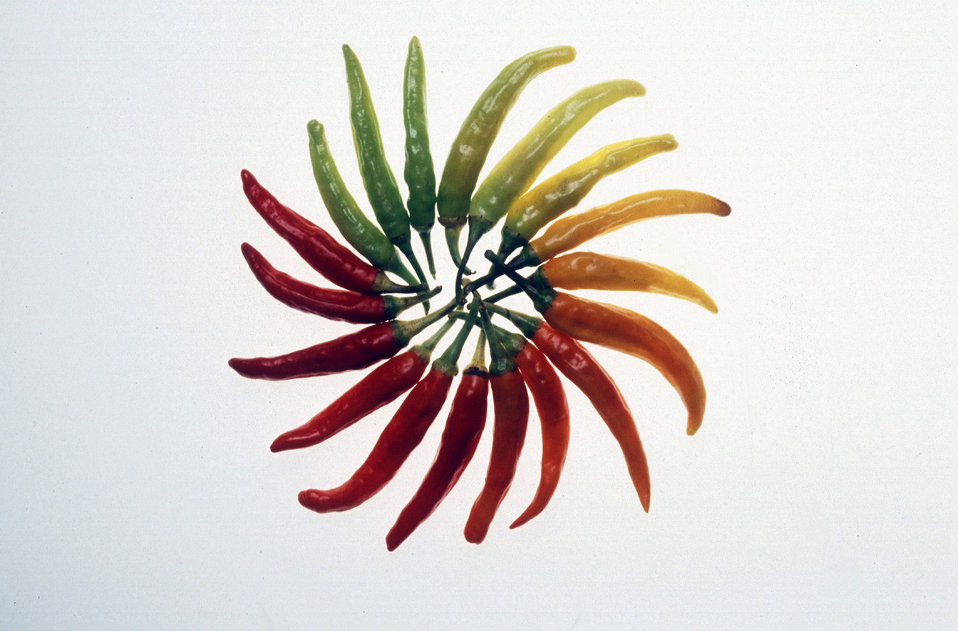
Charleston Hot peppers at varying stages of maturity.